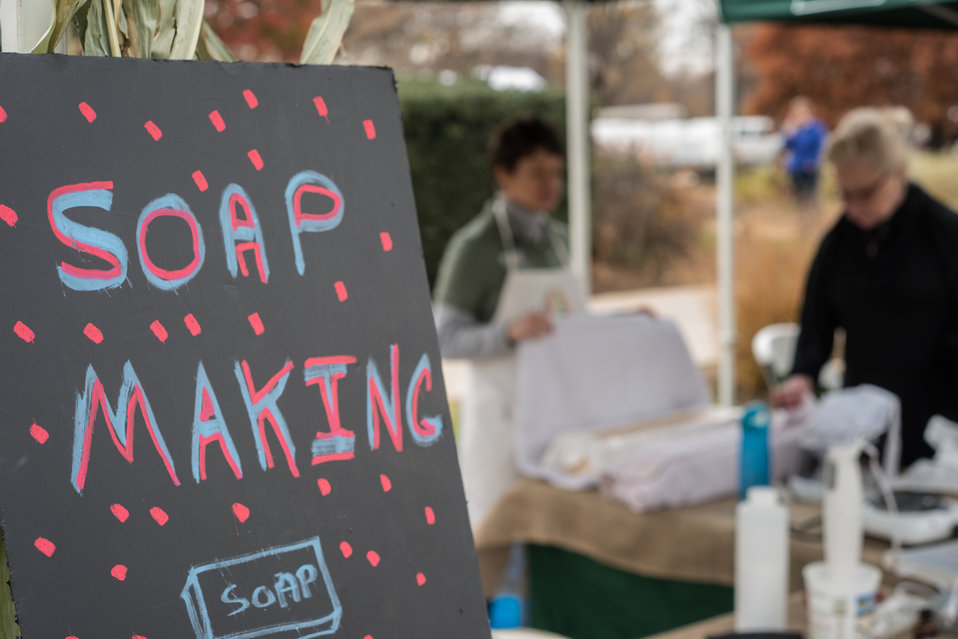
Soap making demonstrations at the U.S. Department of Agriculture (USDA) summer farmers market final outdoor market of the season and Harvest Festival at the USDA Whitten Building east parking lot in Washington, DC, on Friday, November 22, 2013.